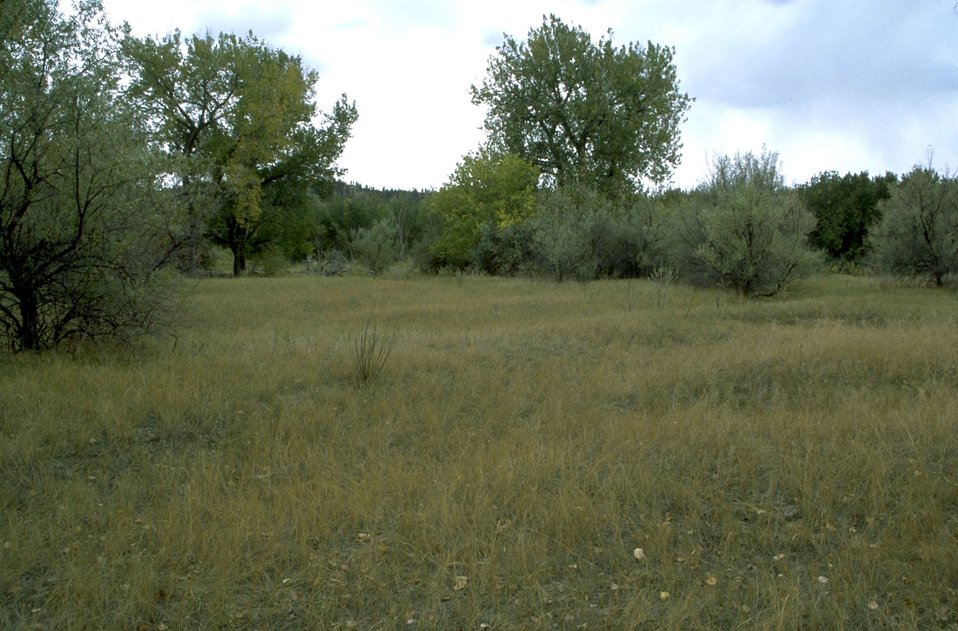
Trees and grass at the Howrey Island Recreation Area